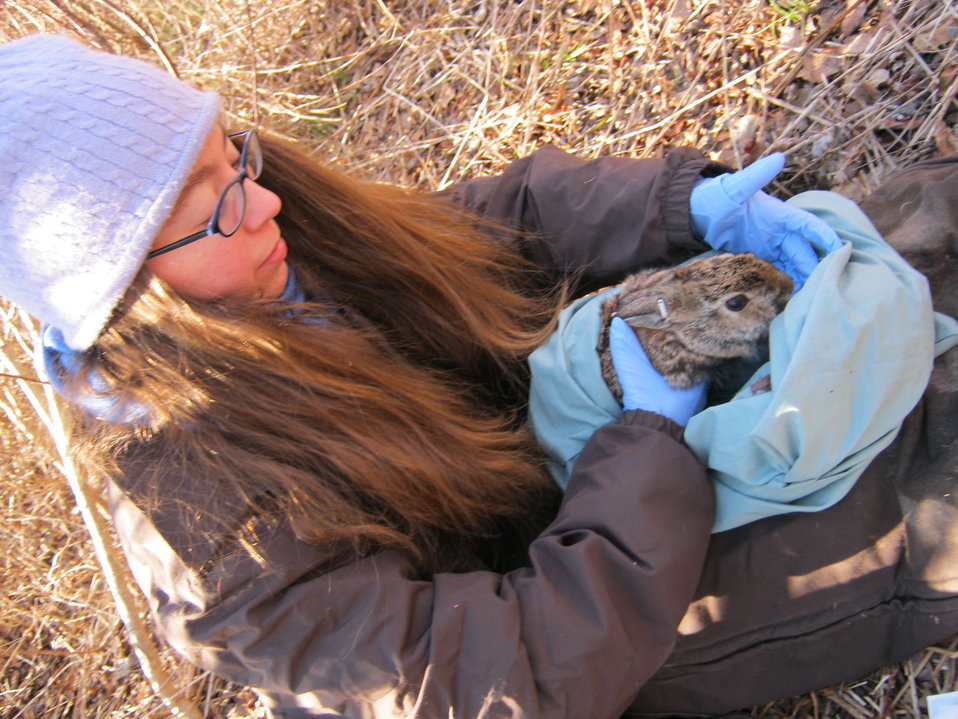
Finding New England cottontails

When there is evidence of rabbits at a site, biologists can trap them and take information to be able to specify what type of rabbit lives there--the non-native eastern or native New England cottontails.

These rabbits can't easily be told apart in the field. The differences can be determined with certainty by skull characteristics and measurements and by DNA techniques.